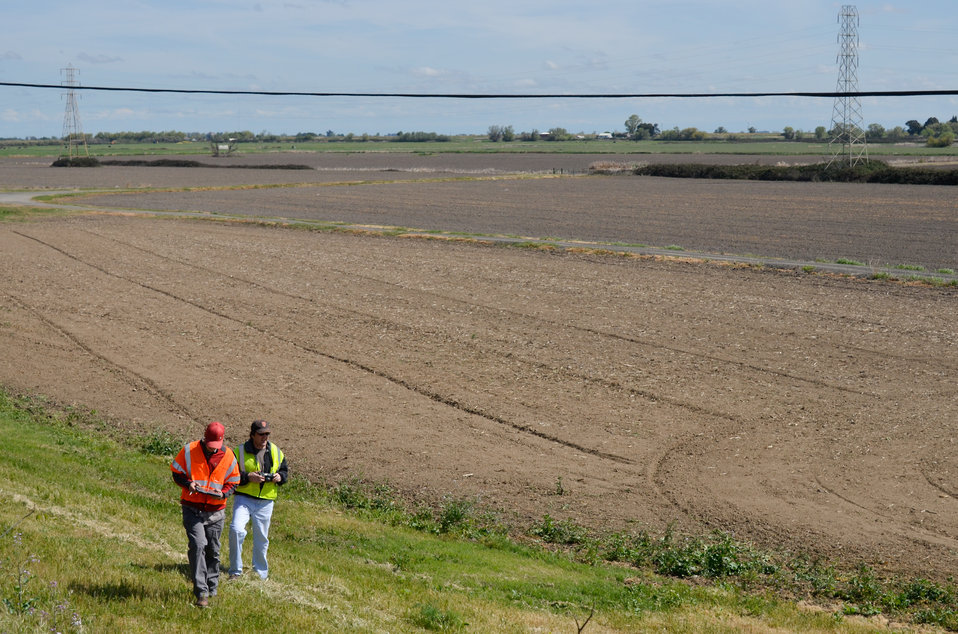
Inspecting a Sacramento River levee

Levee inspectors Ryan Larson (left) and Gene Vaughan, both with the U.S. Army Corps of Engineers Sacramento District, document findings of a routine levee inspection on the Sacramento River near Rio Vista, Calif., March 27, 2013. The results of U.S. Army Corps of Engineers levee inspections determine continued eligibility for federal aid in repairing levees damaged by floods or storms, and help communities understand and make informed decisions about their flood risk. Corps inspectors document all maintenance issues with GPS coordinates and photographs to help agencies that maintain levees prioritize and fix issues as quickly as possible.